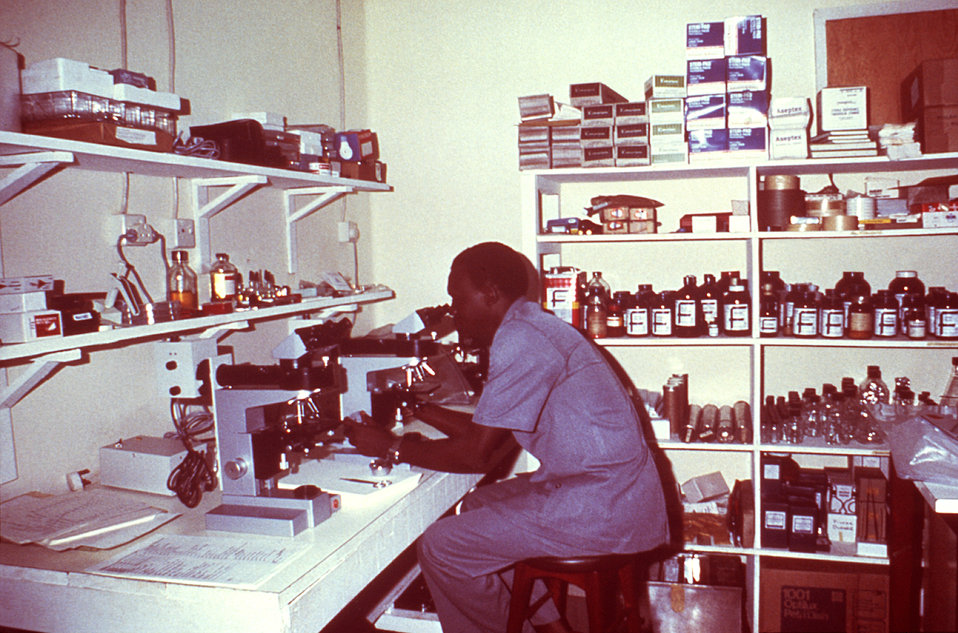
Gabriel, a 1977 Lassa Fever Project staff member, is seen here seated at his Kenema laboratory bench using a microscope.